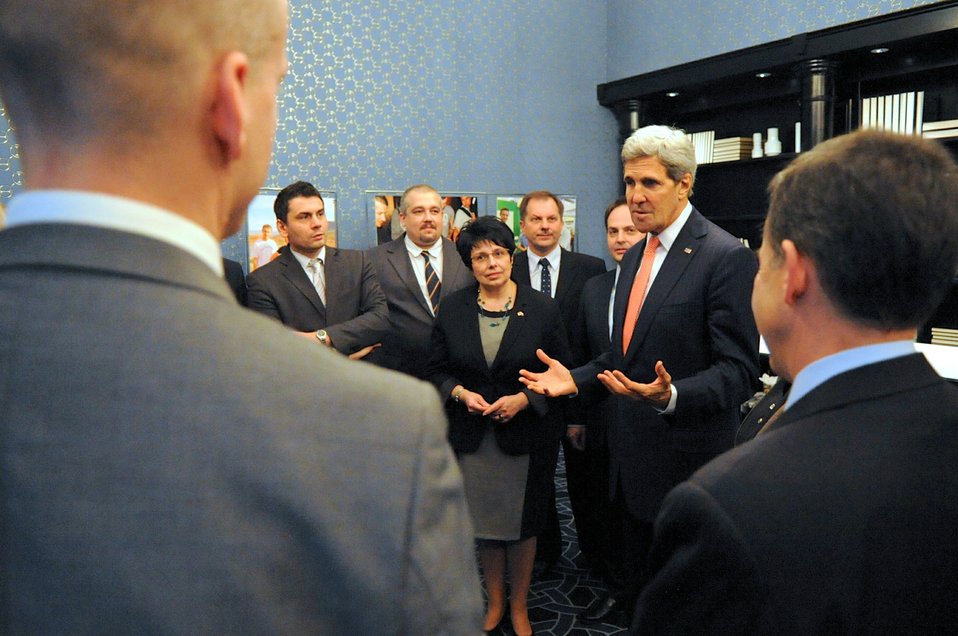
Secretary Kerry Meets With Alumni From the Polish Ministry of Science and Higher Education’s Top 500 Innovators Program

U.S. Secretary of State John Kerry meets with alumni from the Polish Ministry of Science and Higher Education’s Top 500 Innovators program in Warsaw, Poland, on November 5, 2013.